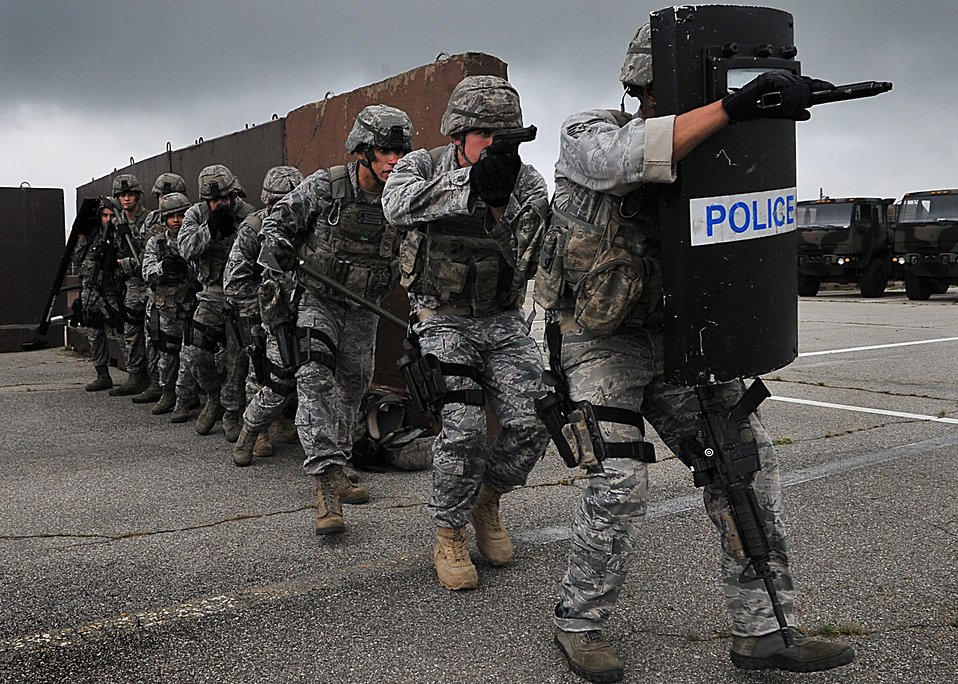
Quick Response

Security Forces personnel participate in Quick Response Team training Aug. 11, 2011, at Osan Air Force Base, South Korea. A QRT provides immediate response to any high-risk security situation including: hostile suspects, workplace violence, domestic violence and abuse response, school violence, and disaster response.